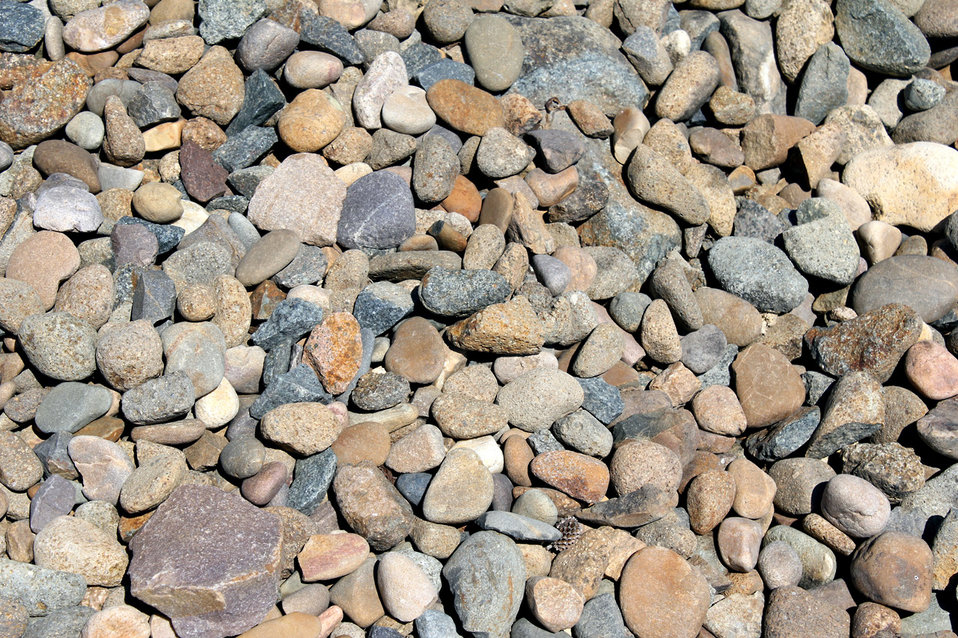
River pebbles #1

Pebbles on the shore at the regatta centre, penrith nsw.